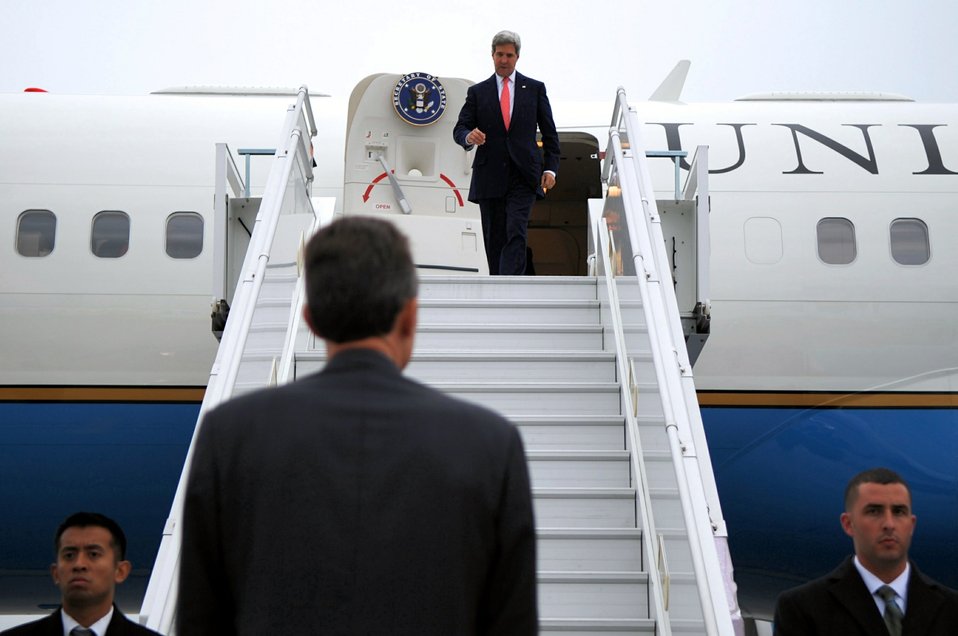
Secretary Kerry Arrives in Geneva for the P5 1 Talks

U.S. Secretary of State John Kerry is greeted by Jean-Luc Choppard, Chief of Protocol for the Canton of Geneva, upon arrival in Geneva, Switzerland, on November 8, 2013, for talks with P5 1 members and Iran about that country's nuclear capabilities.